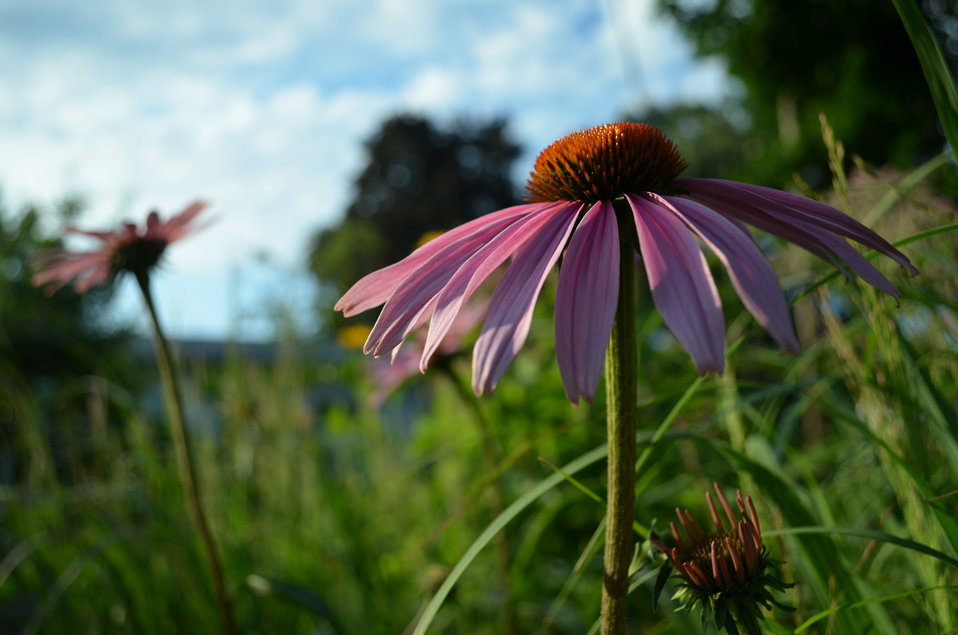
Purple Cone Flower

Small scale restoration! Purple coneflowers bloom in an urban rain garden, offering important habitat to birds, bees and butterflies.